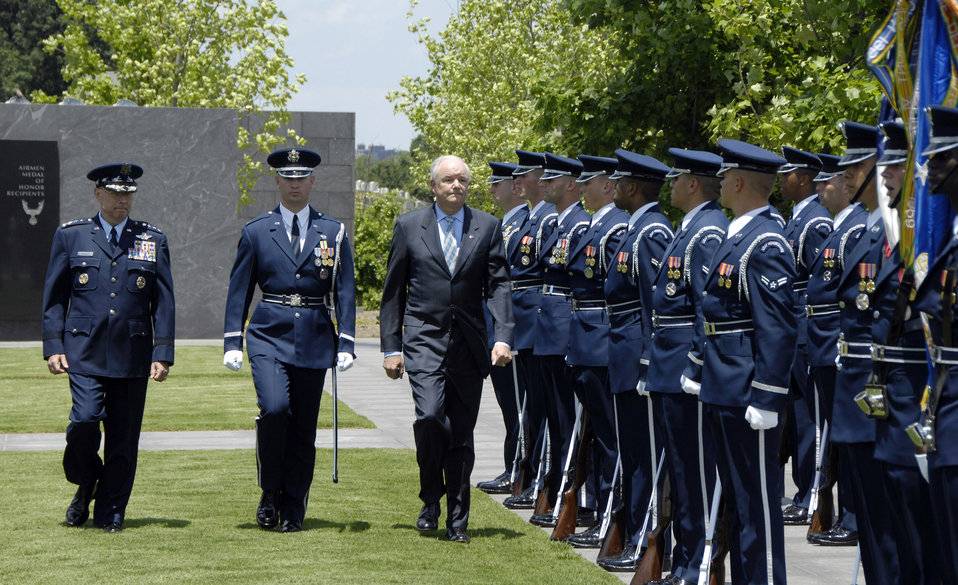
SECAF salutes Airmen during ceremony

The official party walks through a pass-and-review during the farewell ceremony in honor of Michael W. Wynne, Secretary of the Air Force at the U.S. Air Force Memorial, Arlington, Va., June 20. From left to right are Air Force Chief of Staff T. Michael Moseley, Capt. Brent Mundie, the commander of troops from the U.S. Honor Guard and Air Force Secretary Wynne. Secretary Wynne is the Air Force's 21st secretary.